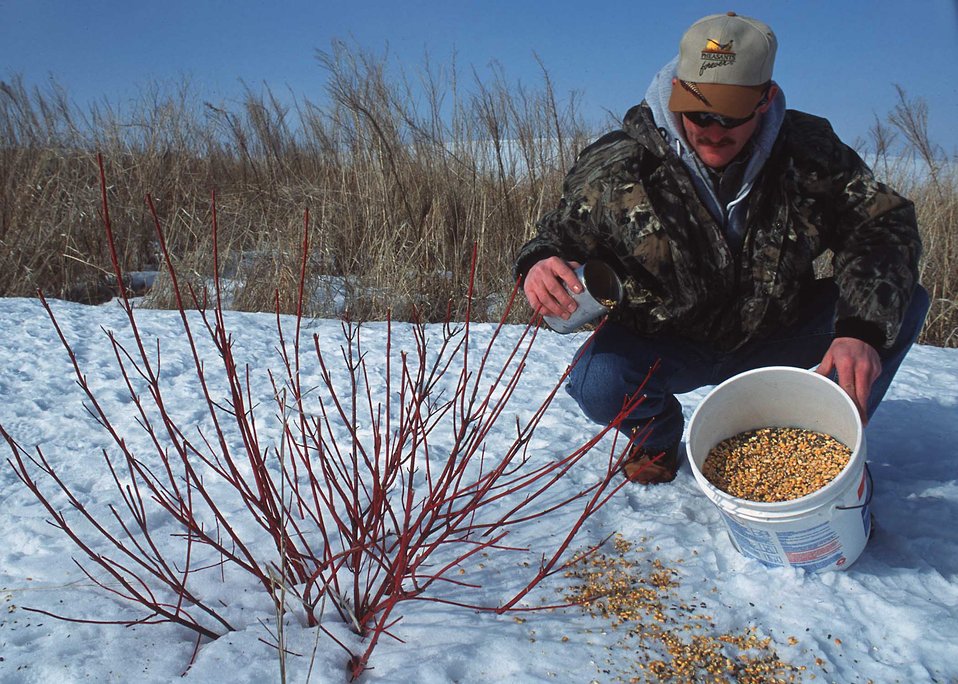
A Cass County, Iowa landowner provides winter food and shelter for pheasants and other birds.